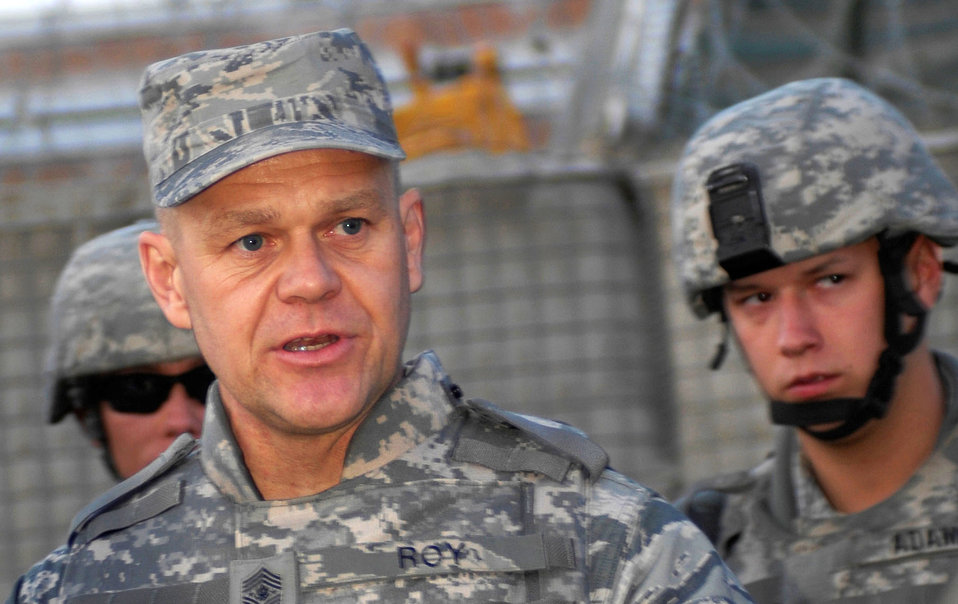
Chief Master Sgt. of the Air Force James A. Roy talks with Airmen from the 455th Expeditionary Security Forces Squadron, Nov. 28, 2009, at Bagram Airfield, Afghanistan.